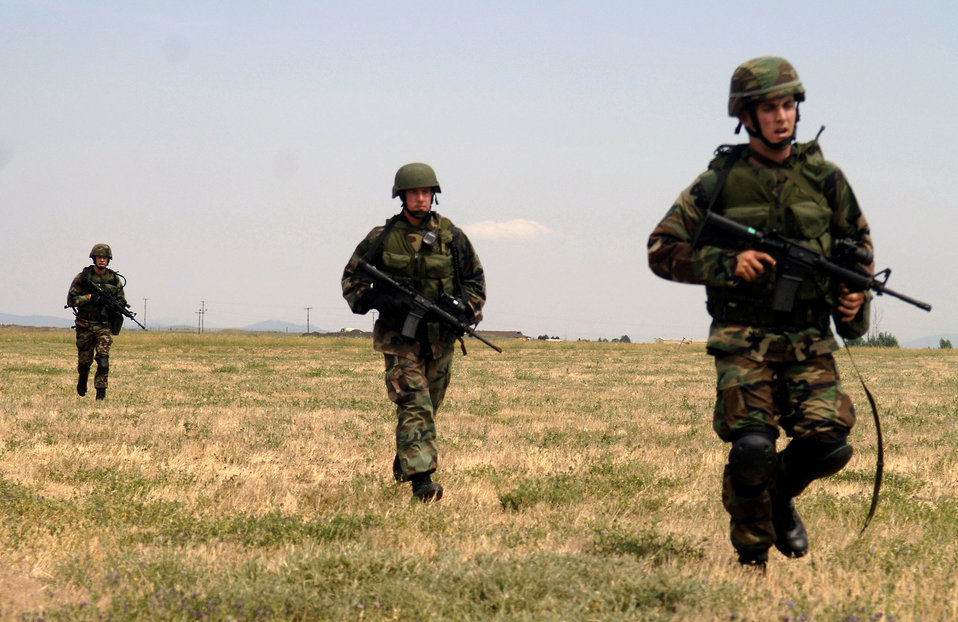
Security forces team trains for Rodeo

Senior Airman David Jones, Staff Sgt. Levi Wilson and Senior Airman Lonnie Bell march to the next checkpoint in a practice training course July 13 at Fairchild Air Force Base, Wash. The three-Airman team is training for the Air Mobility Command Rodeo 2007 at McChord AFB, Wash., being held at the end of July.